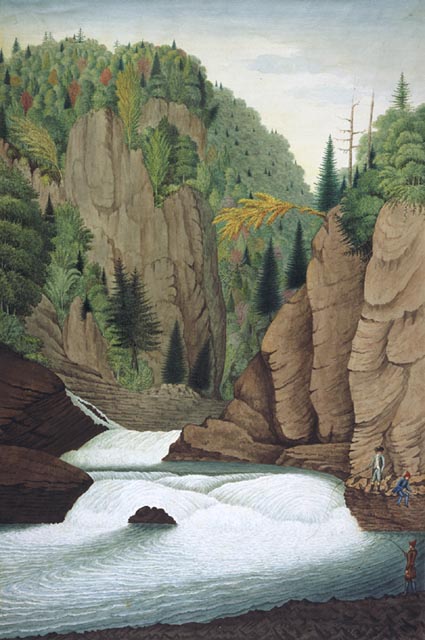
A View of the Lower Part of the Falls of St. Anne near Quebec - Thomas Davies